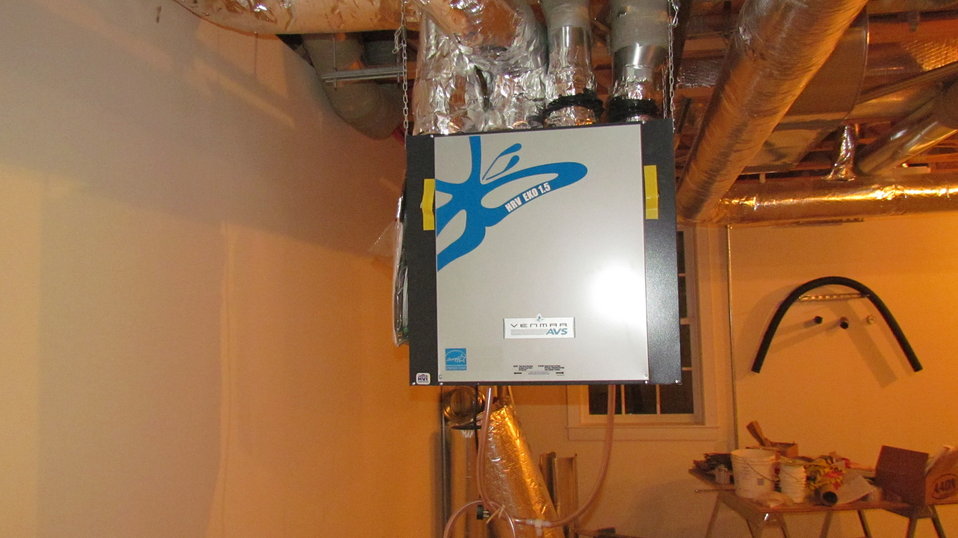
The heat recovery ventilator located in basement of NZERTF. This device is used to mechanically ventilate the facility in accordance with ASHRAE Standard 62. During the winter season this device preheats the incoming fresh air with the heat contained in the stale air being exhausted from the house. In the cooling season the stale air being exhausted from the house cools the incoming fresh air.